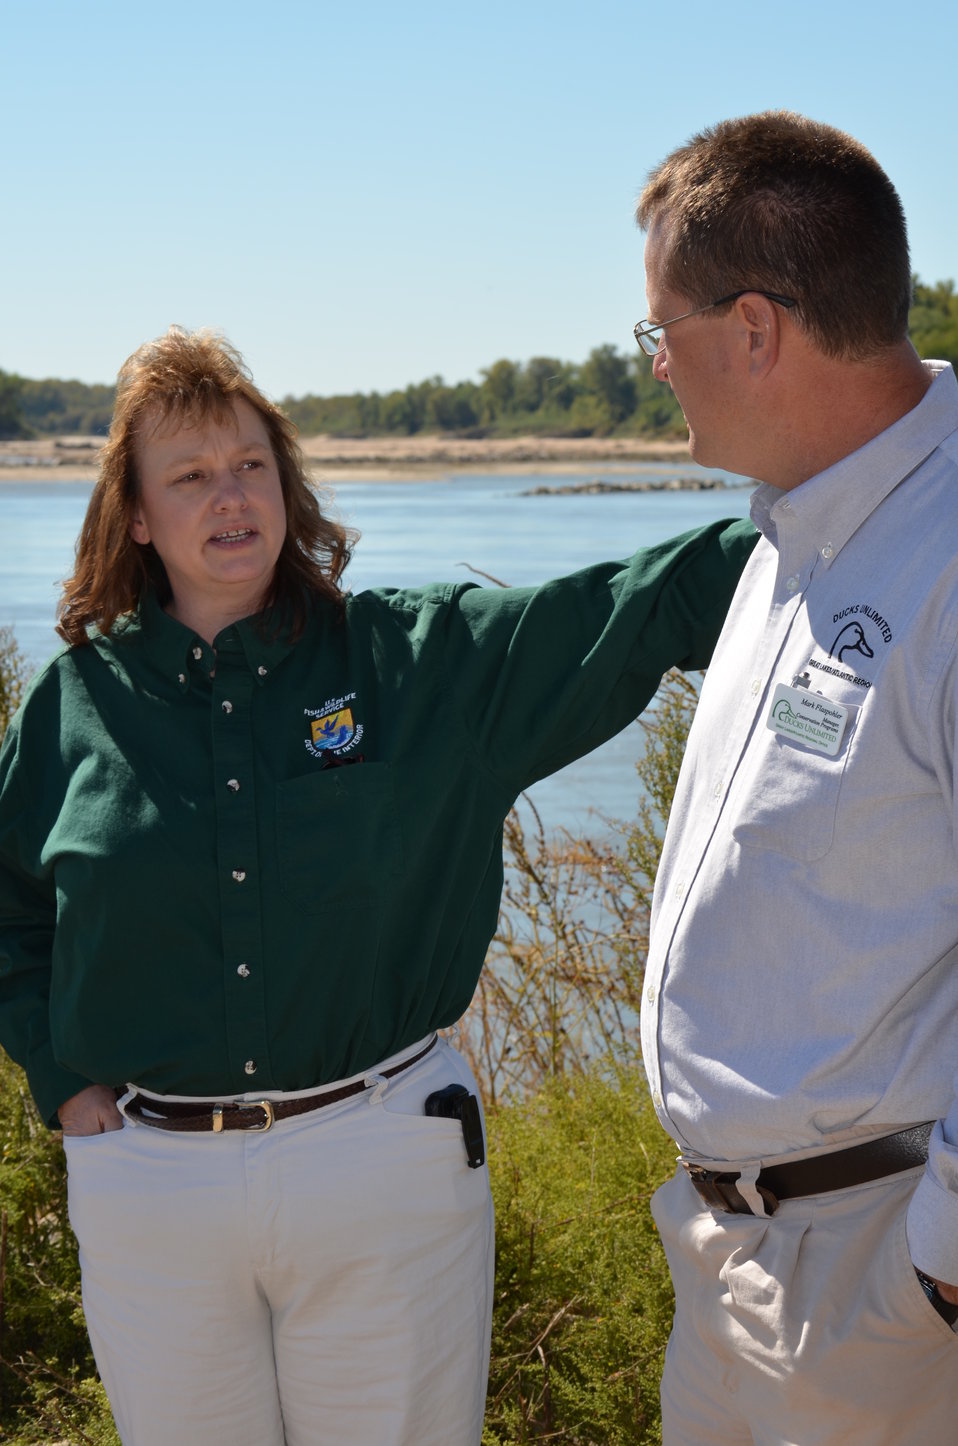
Education and discussion along the banks

USFWS Missouri Private Lands Coordinator Kelly Srigley-Werner with Ducks Unlimited Manager of Conservation Programs Mark Flaspohler at the confluence point.USFWS/Ashley Spratt